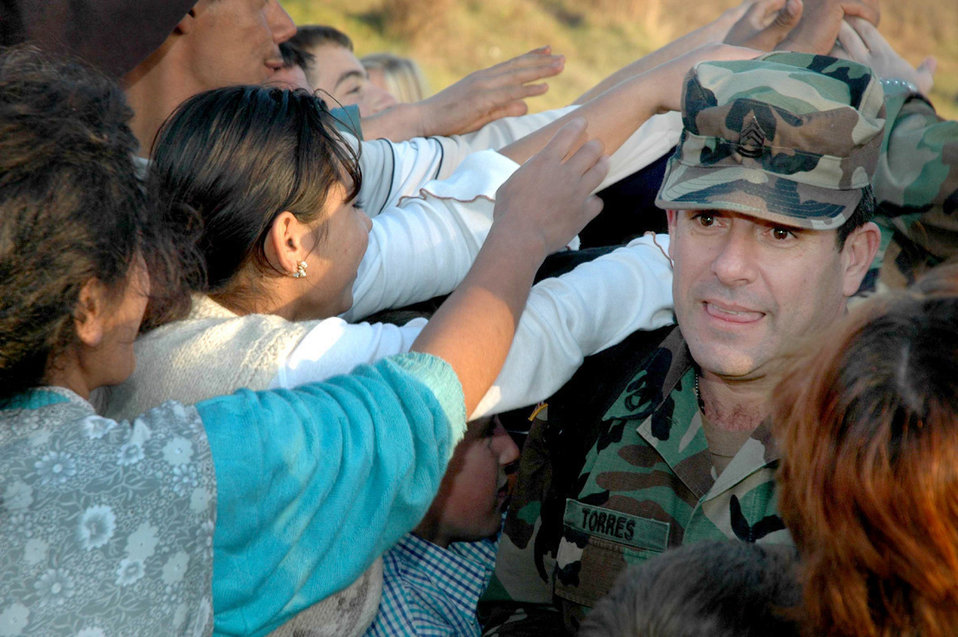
Humanitarian mission

NOVO BRDO, Kosovo (AFPN) -- Children of the Novo Brdo region of Kosovo reach for pieces of candy being distributed by the U.S. Headquarters Kosovo Force personnel during a humanitarian mission.